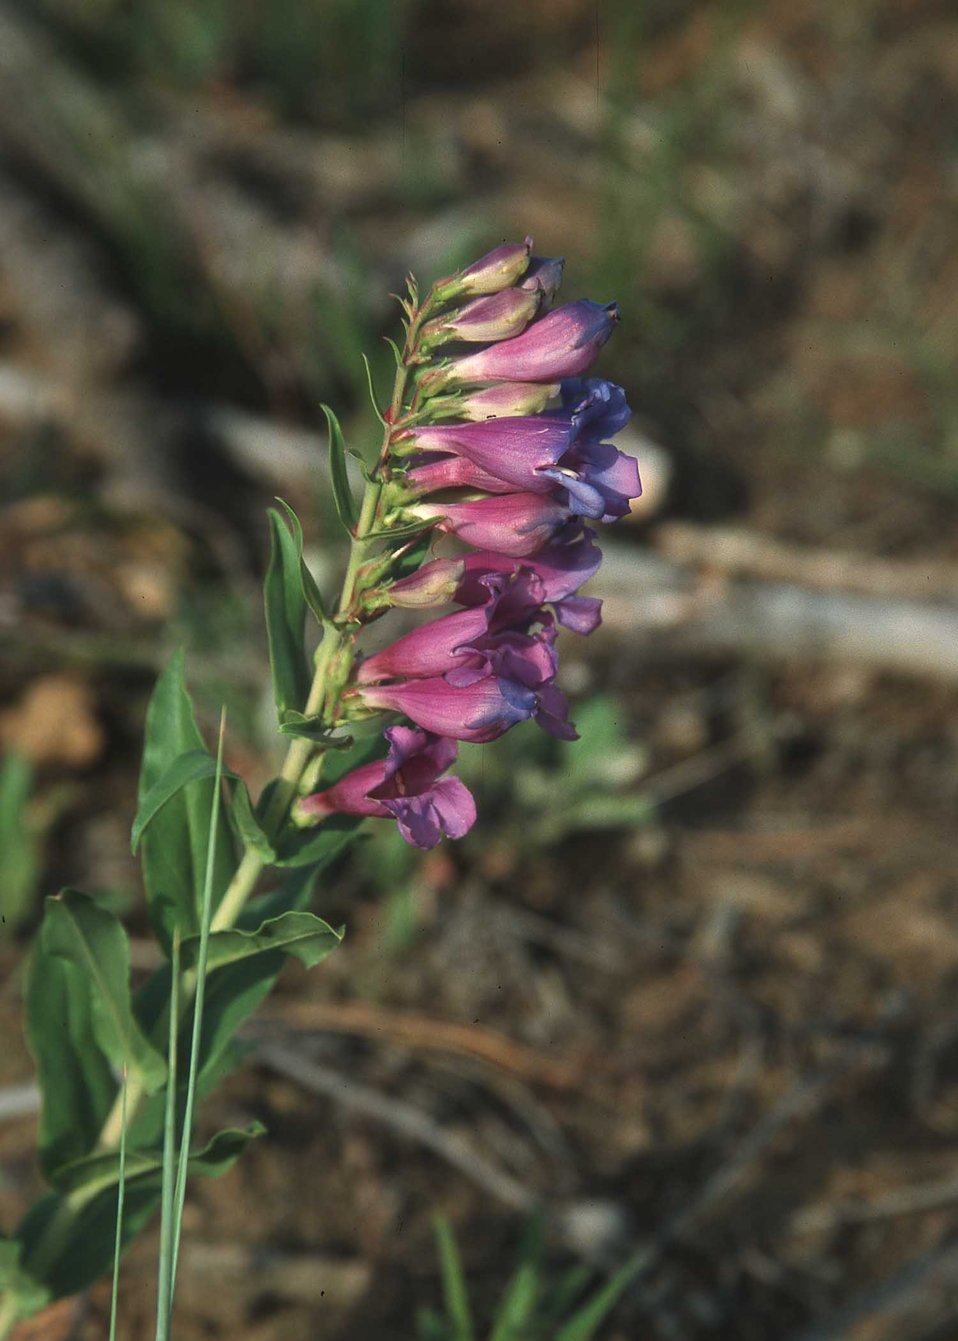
Mimulas spp. Wildflower.